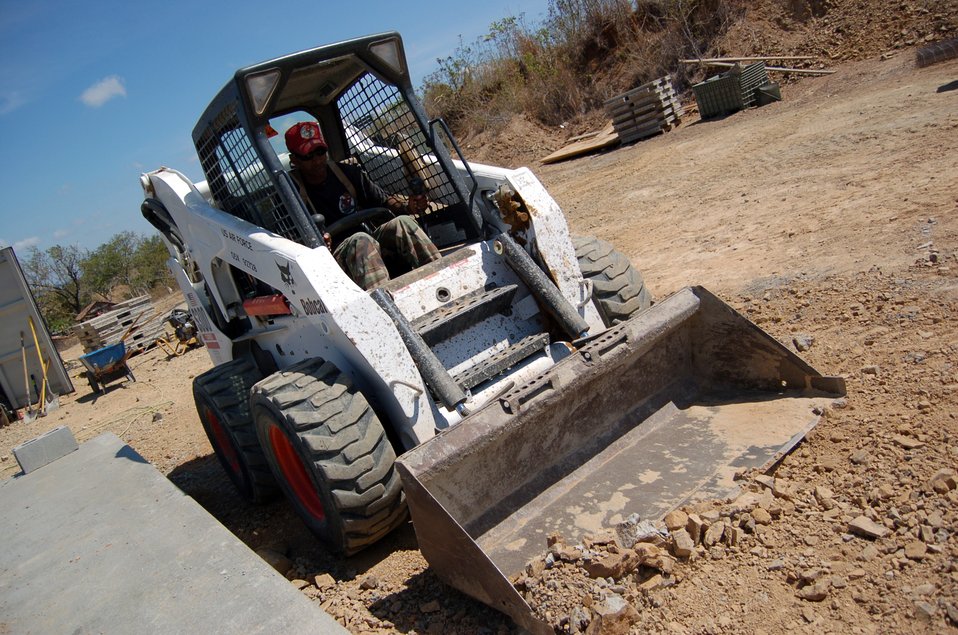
New Horizons Nicaragua

Airman 1st Class Jean Colas, an 820th Expeditionary Red Horse Squadron member, removes rocks from the side of the foundation at the New Horizons-Nicaragua 2007 construction site for a medical clinic in Buena Vista. About 250 military members, including Airmen, Soldiers and Marines, are in Nicaragua until mid-May to help build the clinic and a two-room schoolhouse, and offer free medical care to thousands of Nicaraguans. Airman Colas is deployed from Nellis Air Force Base, Nev.